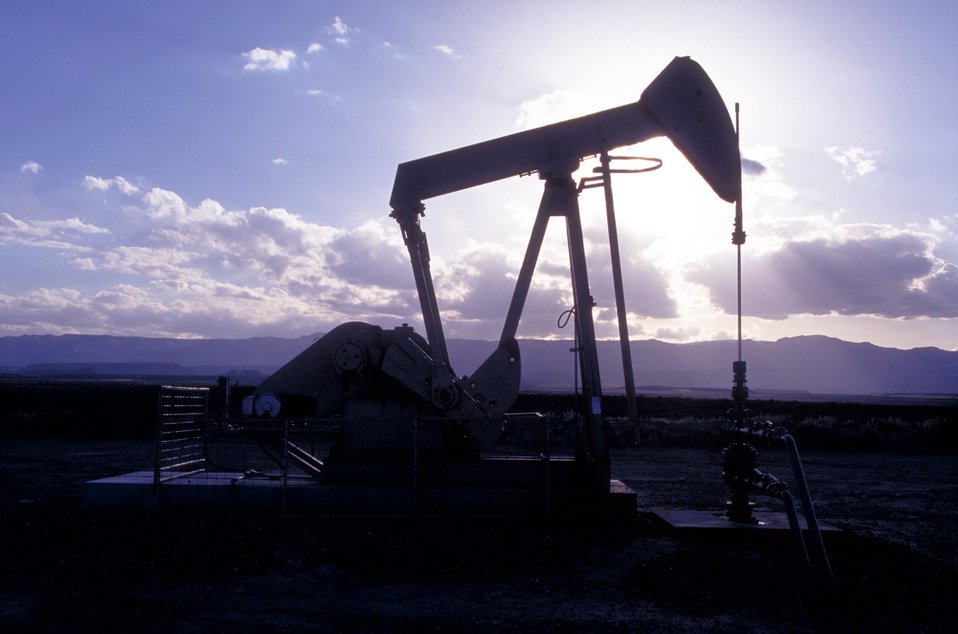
Pump unit producing coal bed methane near Price, Utah.